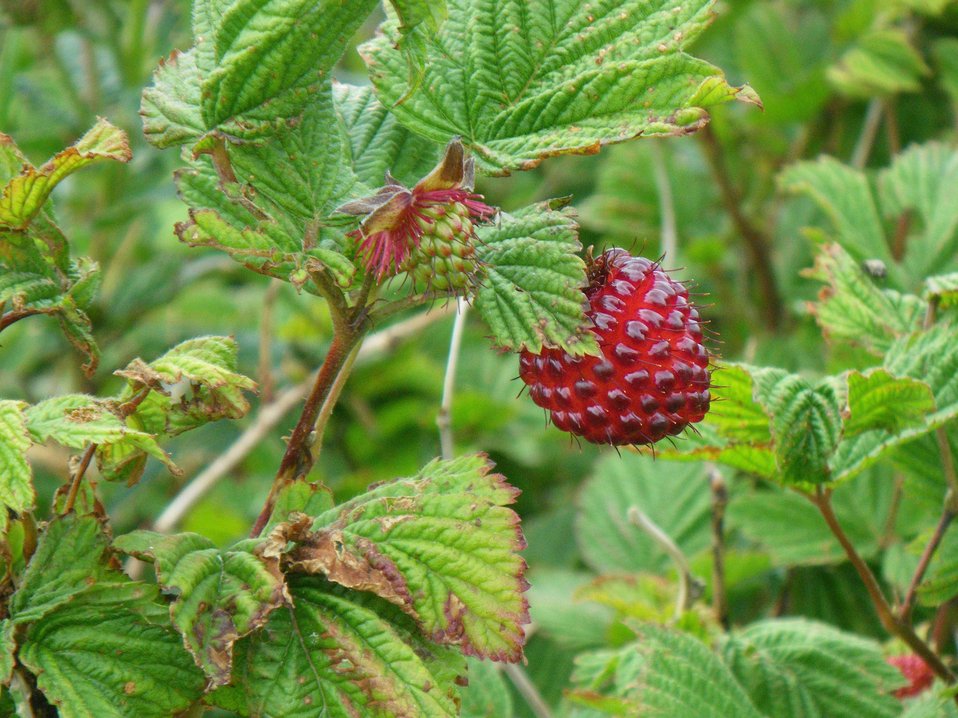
Salmonberry

Izembek National Wildlife Refuge